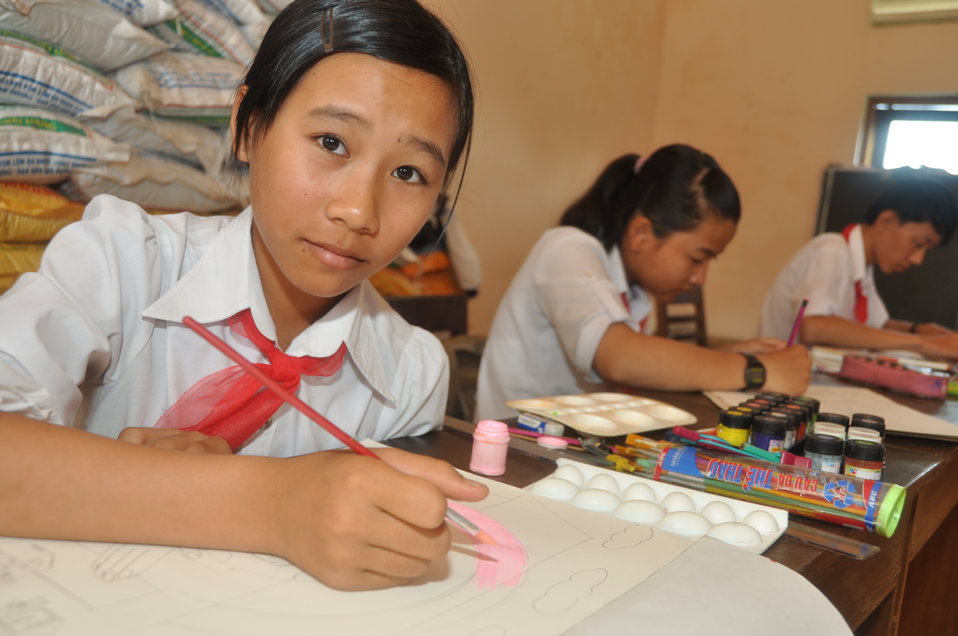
Students in Kon Tum create artwork about the importance of eye care